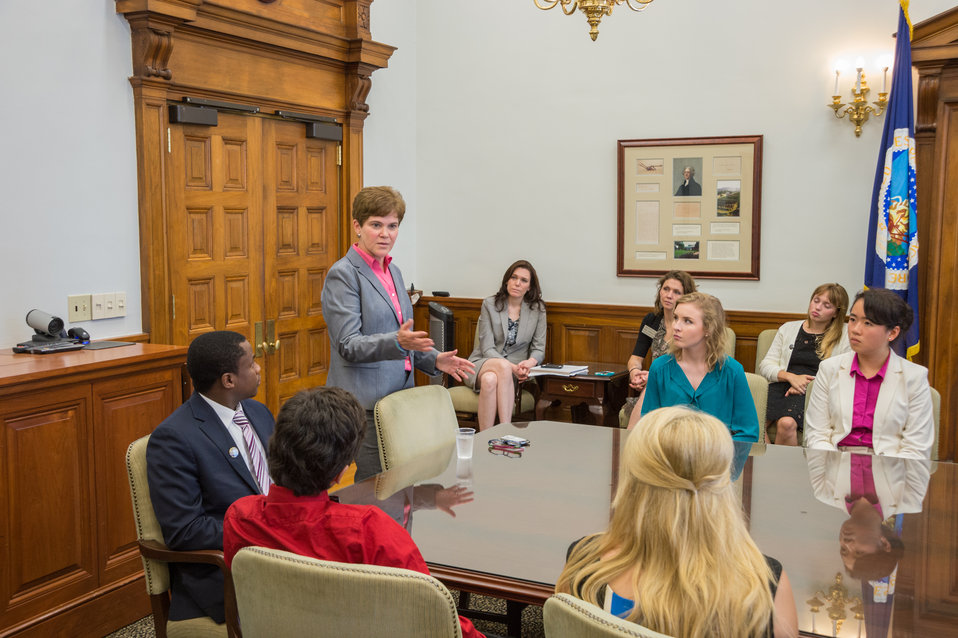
Agriculture Deputy Secretary Krysta Harden met with members of the Wallace-Carver Fellowship Leadership Symposium at the United States Department of Agriculture (USDA) in Washington, DC, Tue. Jun. 17, 2014. The theme of the 2014 Wallace Carver Fellowship is, “The Single Greatest Challenge in Human History-Sustainable Feeding Nine Billion People by 2050.” Named for Henry A. Wallace and George Washington Carver, two of the great American leaders in agricultural science and policy who made significant strides toward ending hunger in the 20th Century, the Wallace-Carver Fellowship seeks to educate, inspire and train the next generation of agricultural leaders, who will lead us in the 21st century.